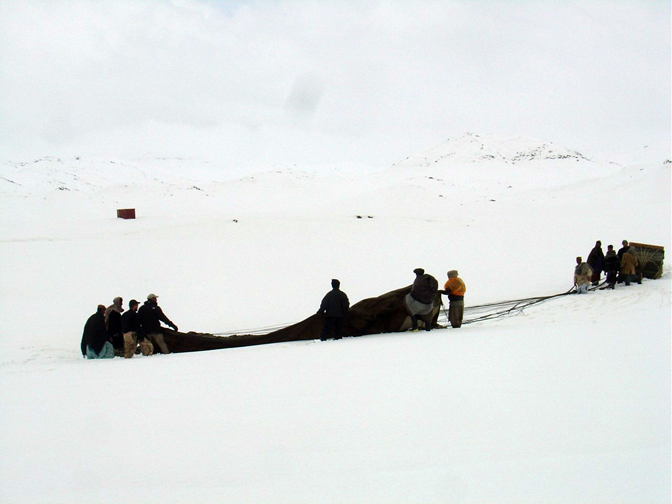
Airmen drop vital supplies to troops in Afghan mountains

SHIN KAY, Afghanistan -- Residents here receive humanitarian supplies dropped by a C-130 Hercules crew.